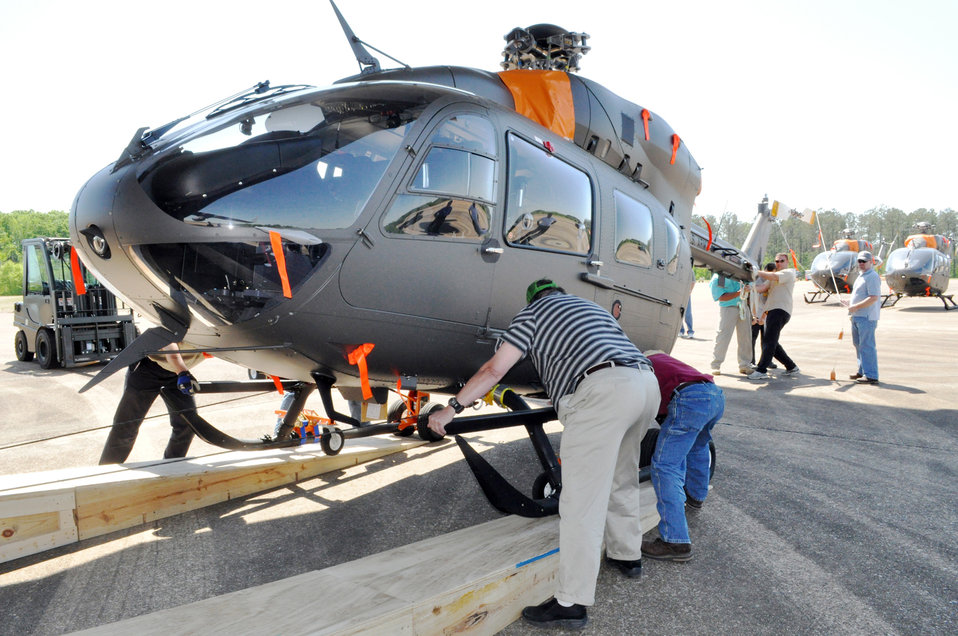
Airmen deliver new Army helicopter to war zone

Representatives from the Air Force, Army and American Eurocopter push a UH-72 Lakota light utility helicopter up the ramp into a C-17 Globemaster III April 12, 2010, at Columbus Air Force Base, Miss.